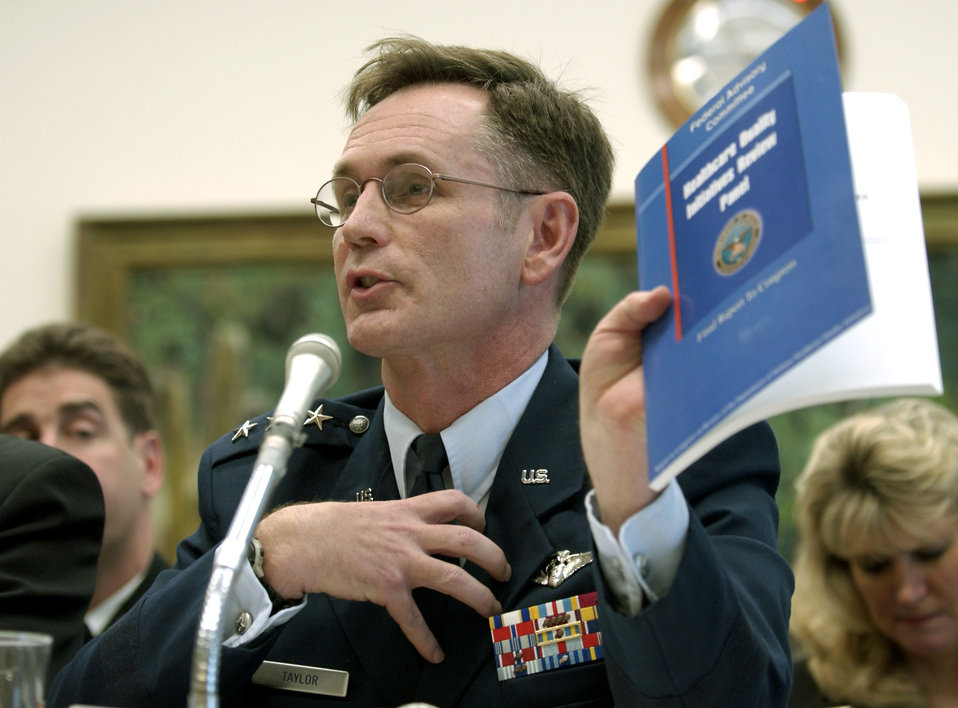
Surgeon general testifies

WASHINGTON -- Lt. Gen. (Dr.) George Peach Taylor Jr., Air Force surgeon general, discusses the